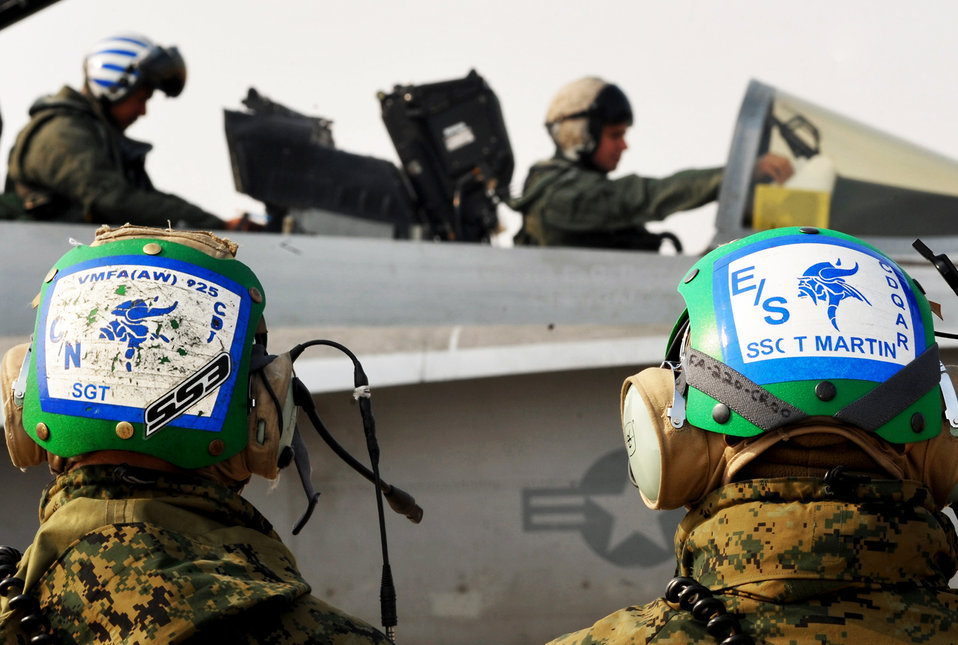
Marine FAS 225 at Osan AB

Marine pilots and maintainers from the Marine Fighter Attack Squadron 225 prepare an F-18 Hornet prior to takeoff Feb. 2, 2011, at Osan Air Base, South Korea.